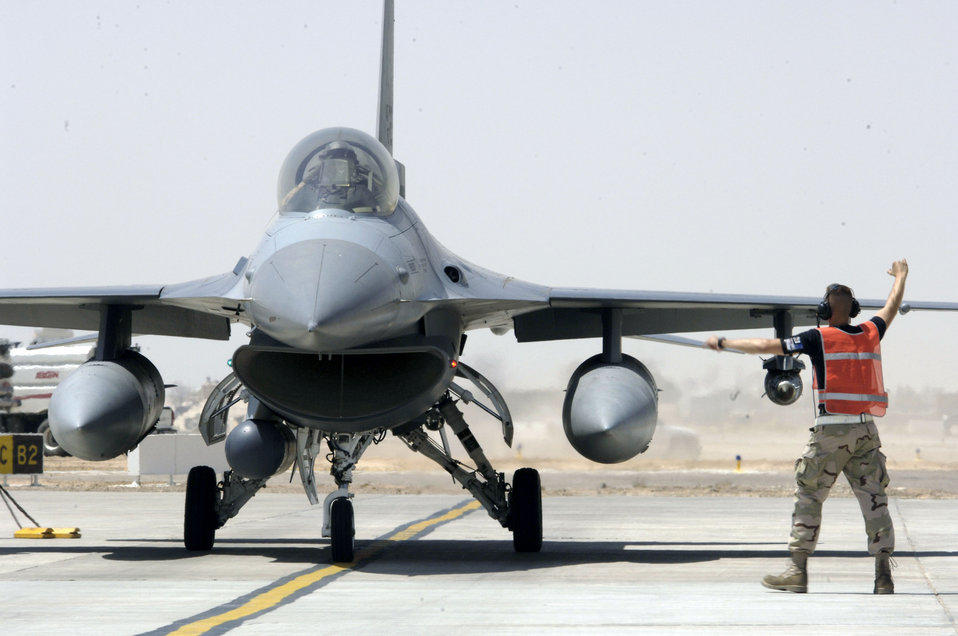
Falcon in the desert

A crewmember marshals an F-16 Fighting Falcon into place for final checks before a mission in support of Operation Iraqi Freedom at Balad Air Base, Iraq, on July 11.